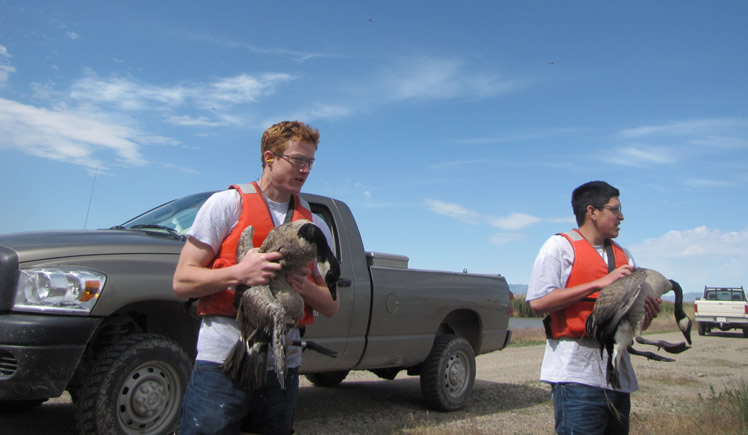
YCC participants with Canada Geese

Youth Conservation Corps (YCC) participants handle Canada Geese as part of a banding project. The YCC crew assisted the Utah Department of Natural Resources with this project.